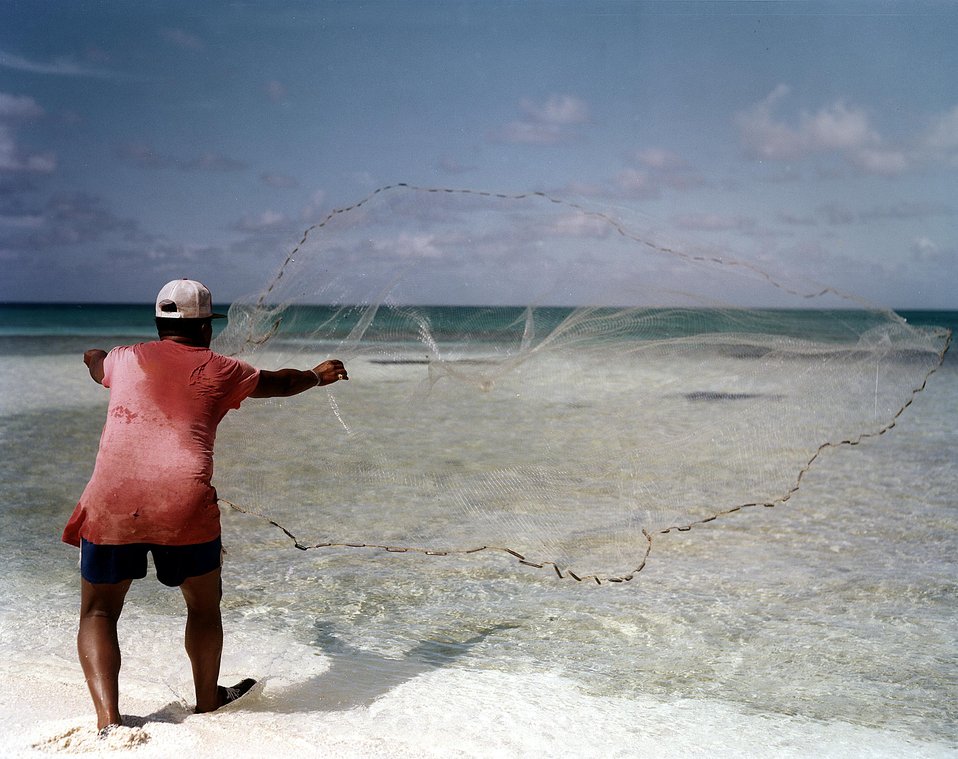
Survey team member taking marine samples from Bikini Atoll
11-15-78